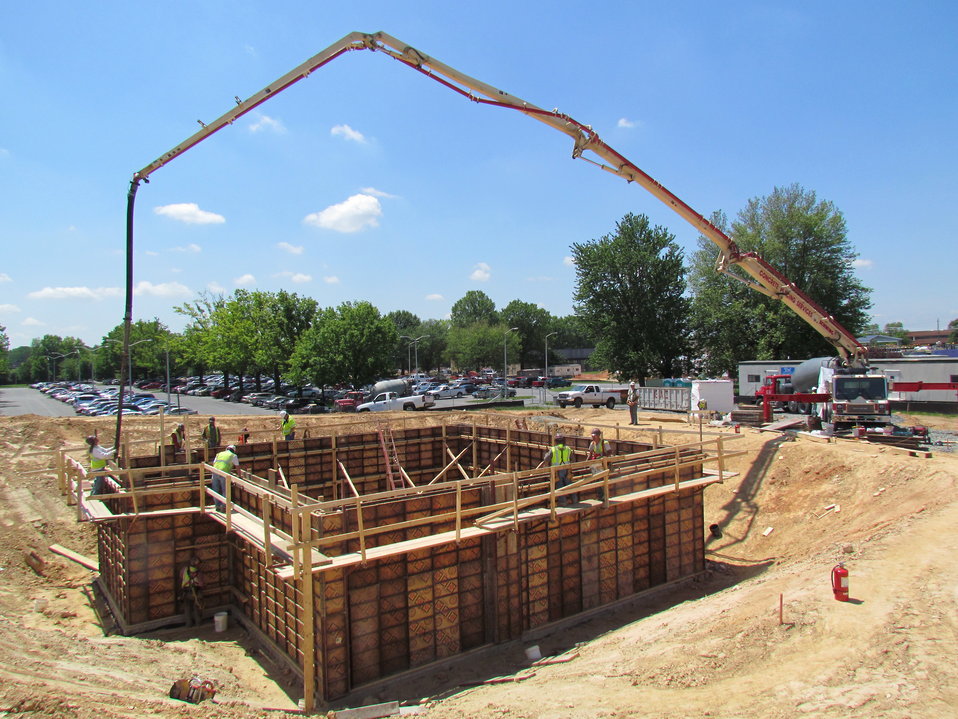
Net-Zero Energy Residential Test Facility - Construction photo showing concrete pumper truck being used to fill basement wall forms with concrete.